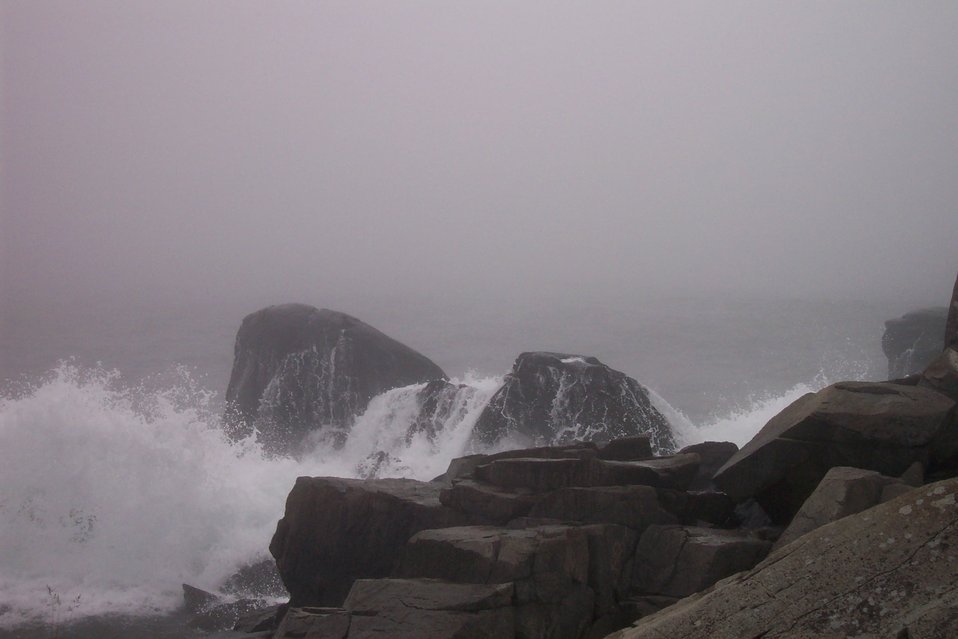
Rock, foam, and fog.